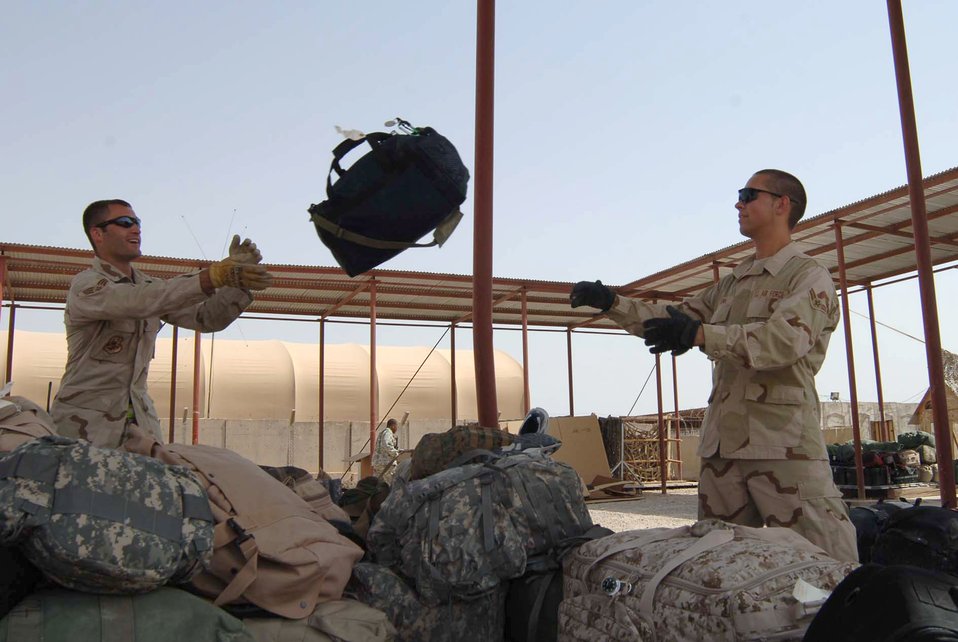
Airmen in Baghdad keep convoys off the road

Senior Airman Jonathon Burns (left) and Airman 1st Class Michael Senn, 447th Logistics Readiness Squadron air transportation specialists, build a passenger baggage pallet at the aerial port at Sather Air Base, Iraq, for outgoing troops. Their flight works around the clock to process more than 5,000 passengers and their baggage weekly.